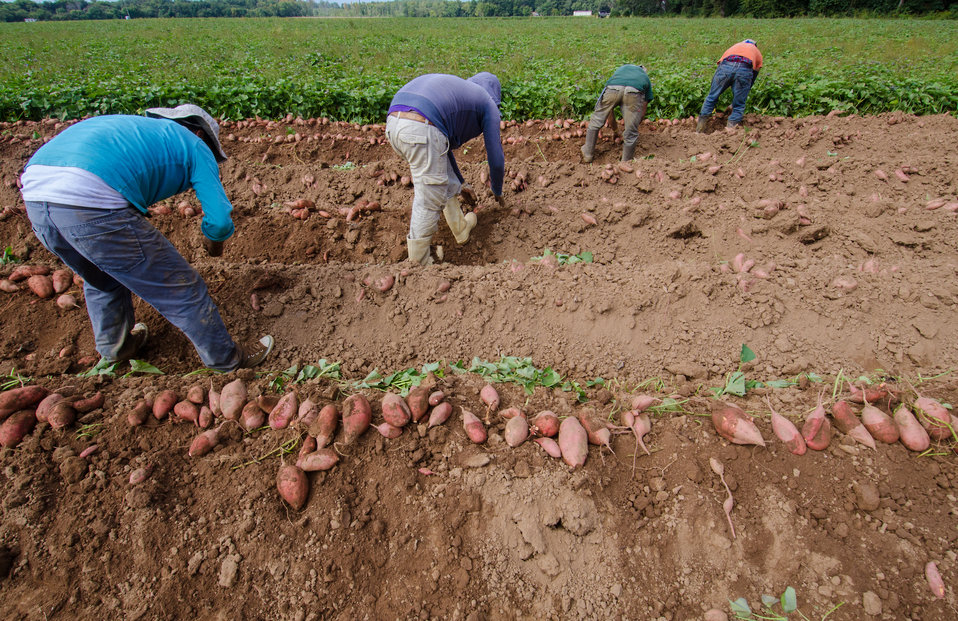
Harvested hand picked large sweet potatoes, at Kirby Farms in Mechanicsville, VA on Friday, Sept. 20, 2013. 200 acres of the farm are devoted to eggplant, spinach, beets, tomato, jalapeno peppers, melons and a variety of greens. Soybeans and small grain are grown on the remaining 300 acres. Using rotational crop practices allows Kirby Farms to double and triple crop yields. Wholesalers, who buy from this farm, sell the produce to major supermarkets in the Mid-Atlantic region, from North Carolina to Maryland. Restaurants in the local area prepare and serve the local bought produce to patrons in the Richmond, VA metropolitan area.